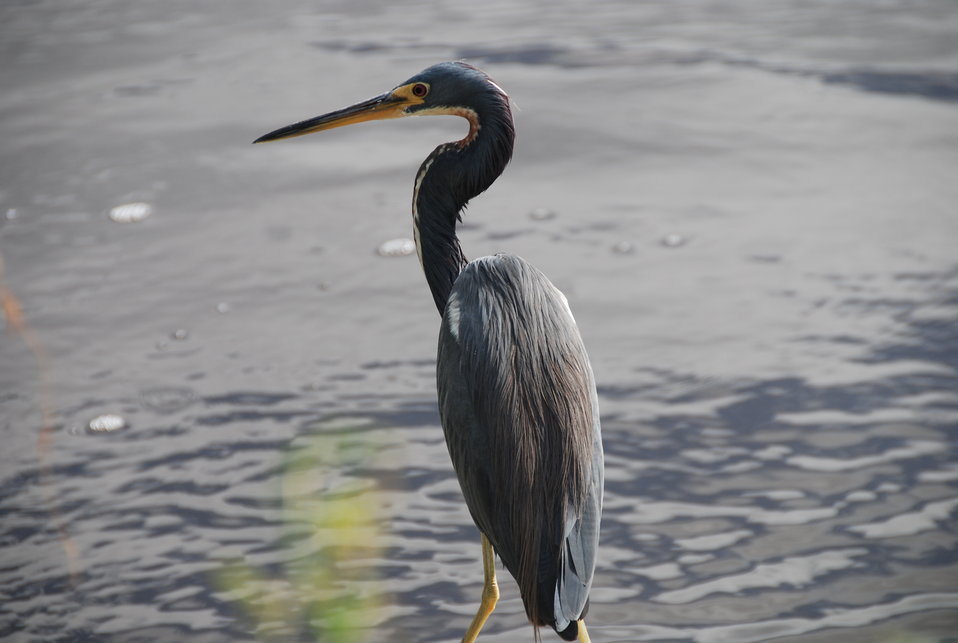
Tri-colored heron

In non-breeding plumage.